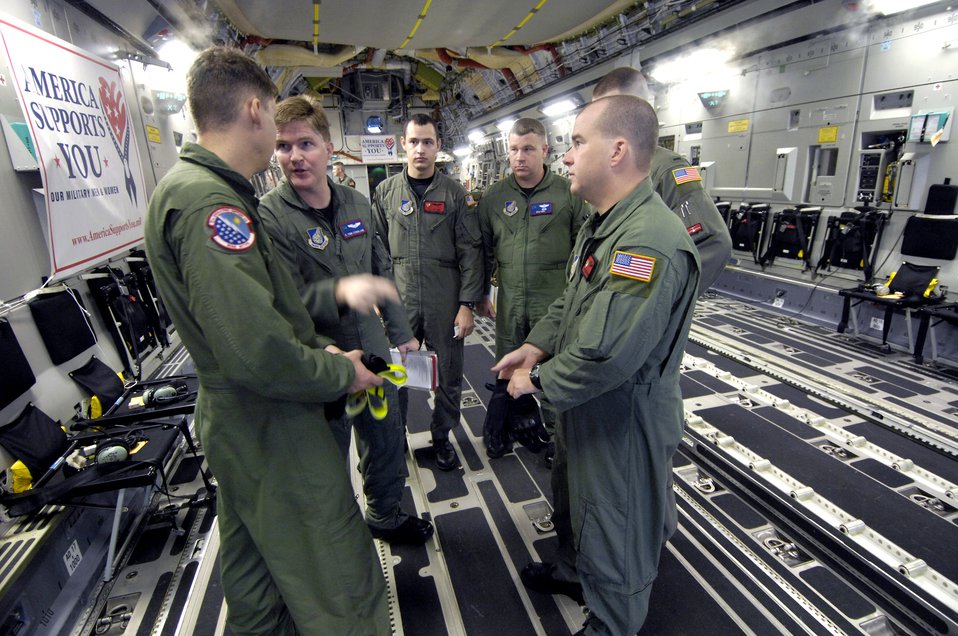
Andersen airdrop

Aircrew members go over a safety briefing before conducting an airdrop mission on a C-17 Globemaster III Dec. 14 at Andersen Air Force Base, Guam. The C-17 from Hickam Air Force Base, Hawaii, is conducting airdrop training at Andersen AFB. The Airmen are from the 535th Airlift Squadron.